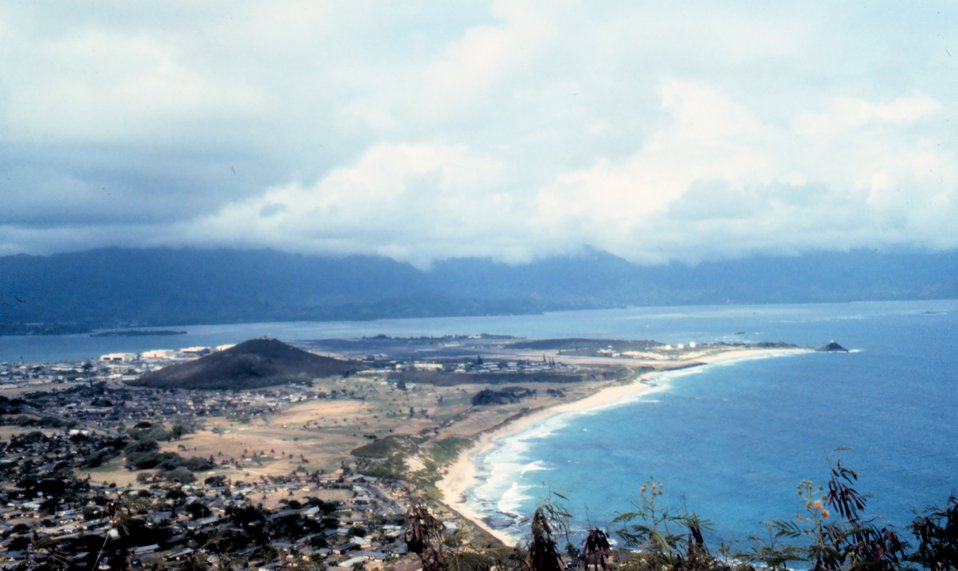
View of Pyramid Rock from Makapu Point looking north and west across Kaneohe Bay